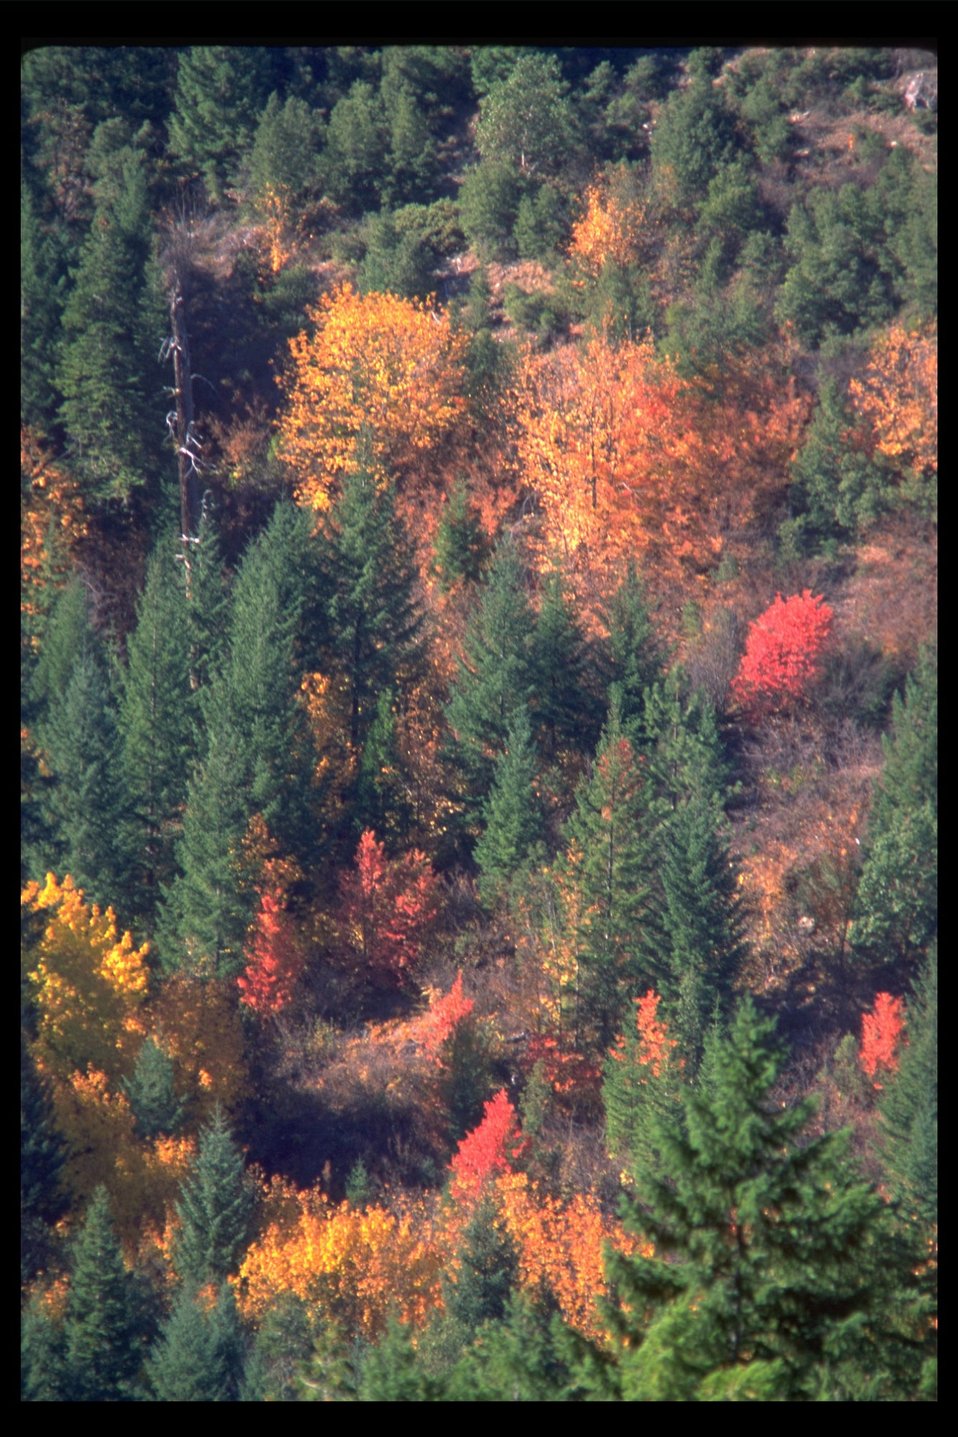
Arial shot of conifers and hardwoods along Timber Creek.